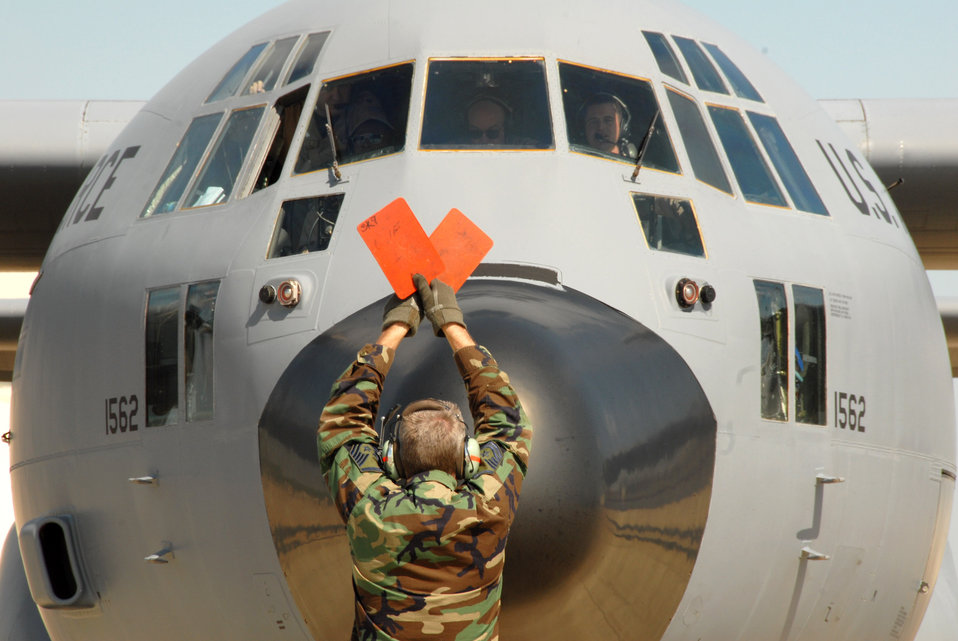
Nothing can be finer than to be in Carolina

Master Sgt. James Holder directs a C-130 Hercules April 6 at Charlotte Douglas International Airport in North Carolina. The plane and crew are assigned to the 145th Airlift Wing of the North Carolina Air National Guard, and is returning from a tour of duty in Afganistan.